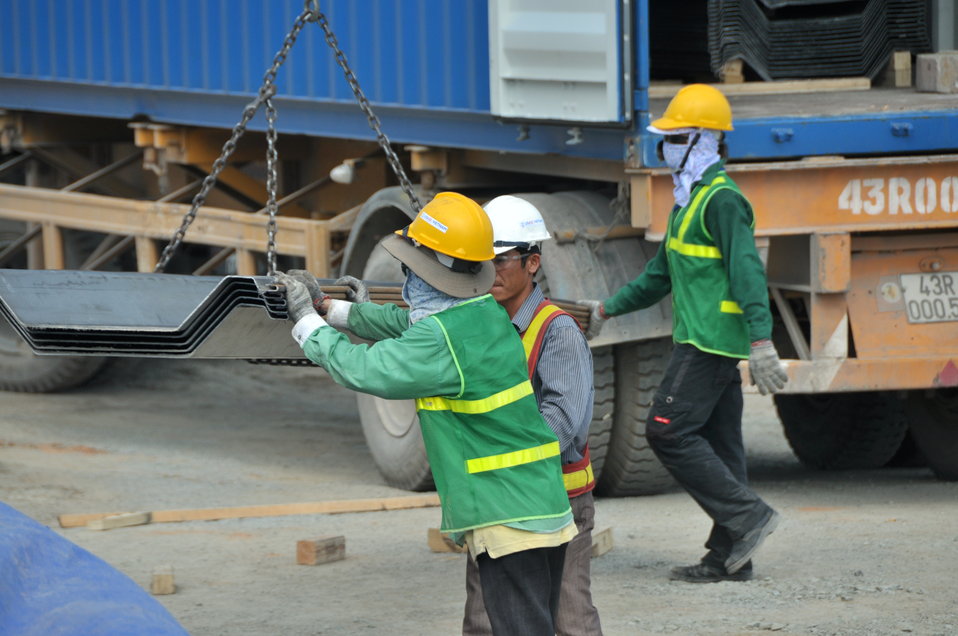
Site construction at the Environmental Remediation of Dioxin Contamination at Danang Airport

Progress at the Danang Airport remediation site
April 23, 2013